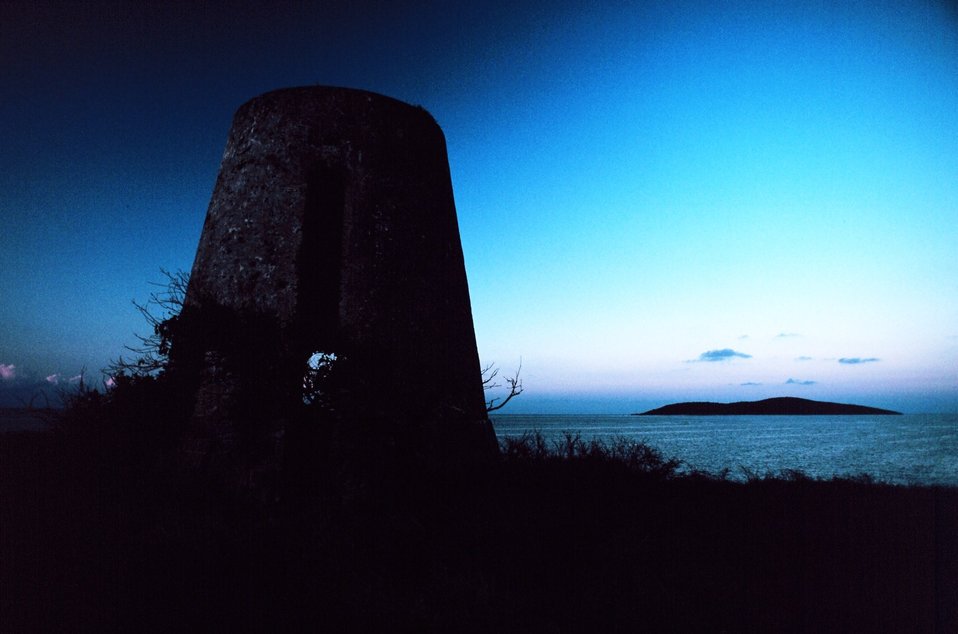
A Danish windwill ruin at sunset on the northeast end of St. Croix. Buck Island Reef National Monument is in the background.